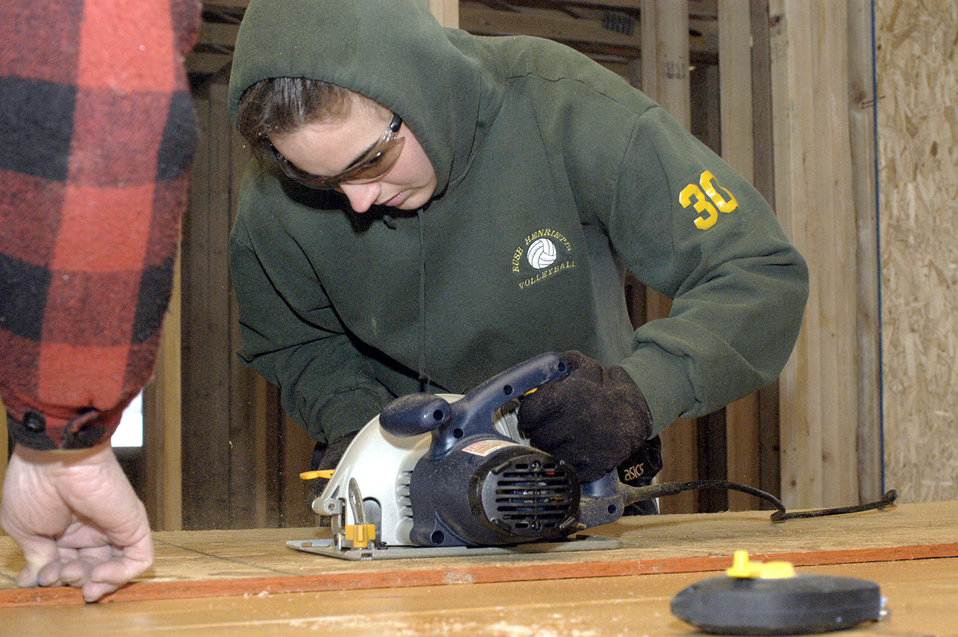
Building dreams

OGDEN, Utah -- Airman 1st Class Heather Mummery cuts plywood for the walls of a new Habitat for Humanity house airmen from nearby Hill Air Force Base are building. Airman Mummery is a line delivery crew chief with the 388th Equipment Maintenance Squadron.